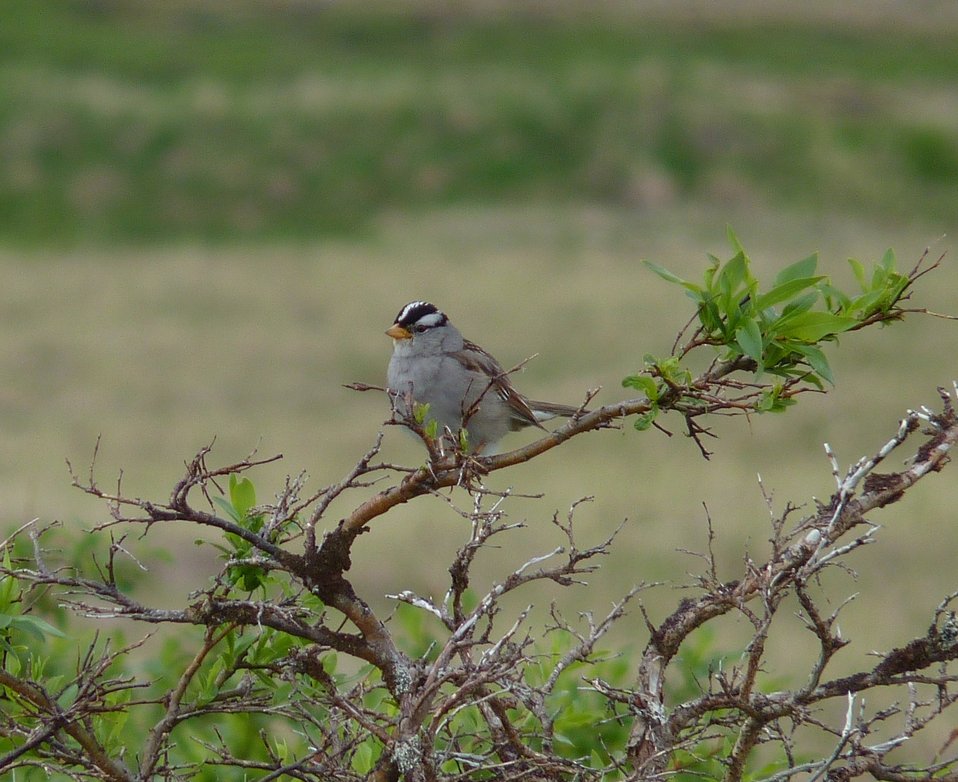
White-crowned Sparrow

Andreafsky wilderness, Yukon Delta National Wildlife Refuge